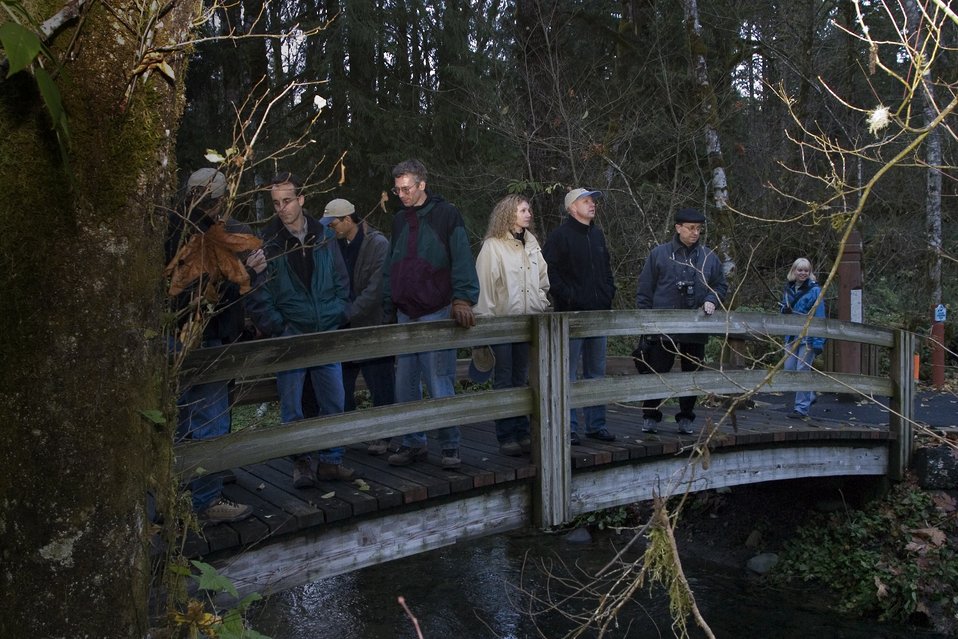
Oksana Rudenko, Kamchatka Regional Administrator, Alexander Chistyakov, Vice-Governor of Kamchatka, and Vyacheslav Zvyagintsev Wild Salmon Center Kamchatka Representative look down the side channel of the Salmon River that passes in front of the fish viewing structure a BLM’s Wildwood Recreation site.